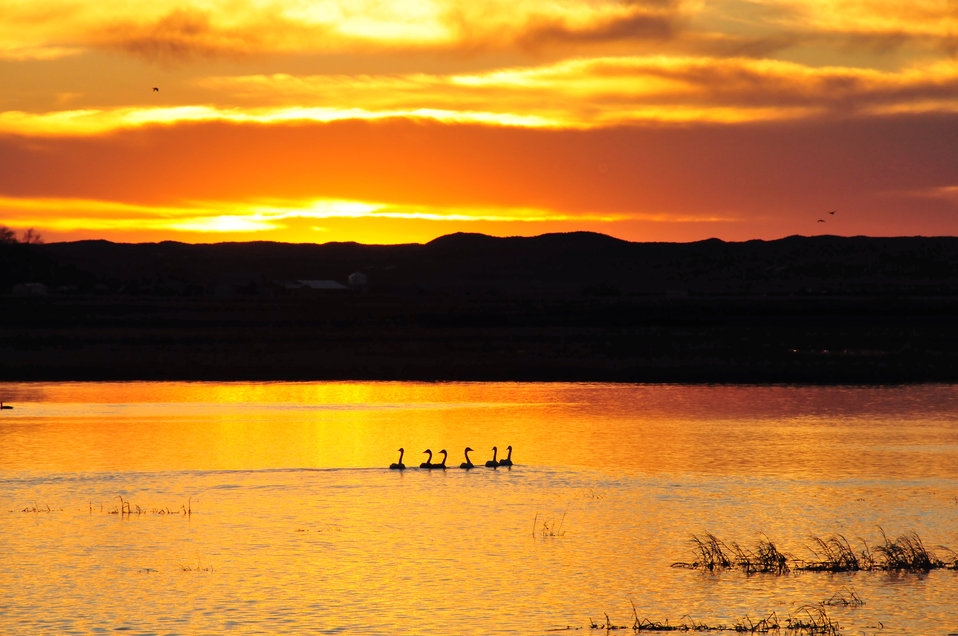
Trumpeter swans at sunset Lacreek National Wildlife Refuge